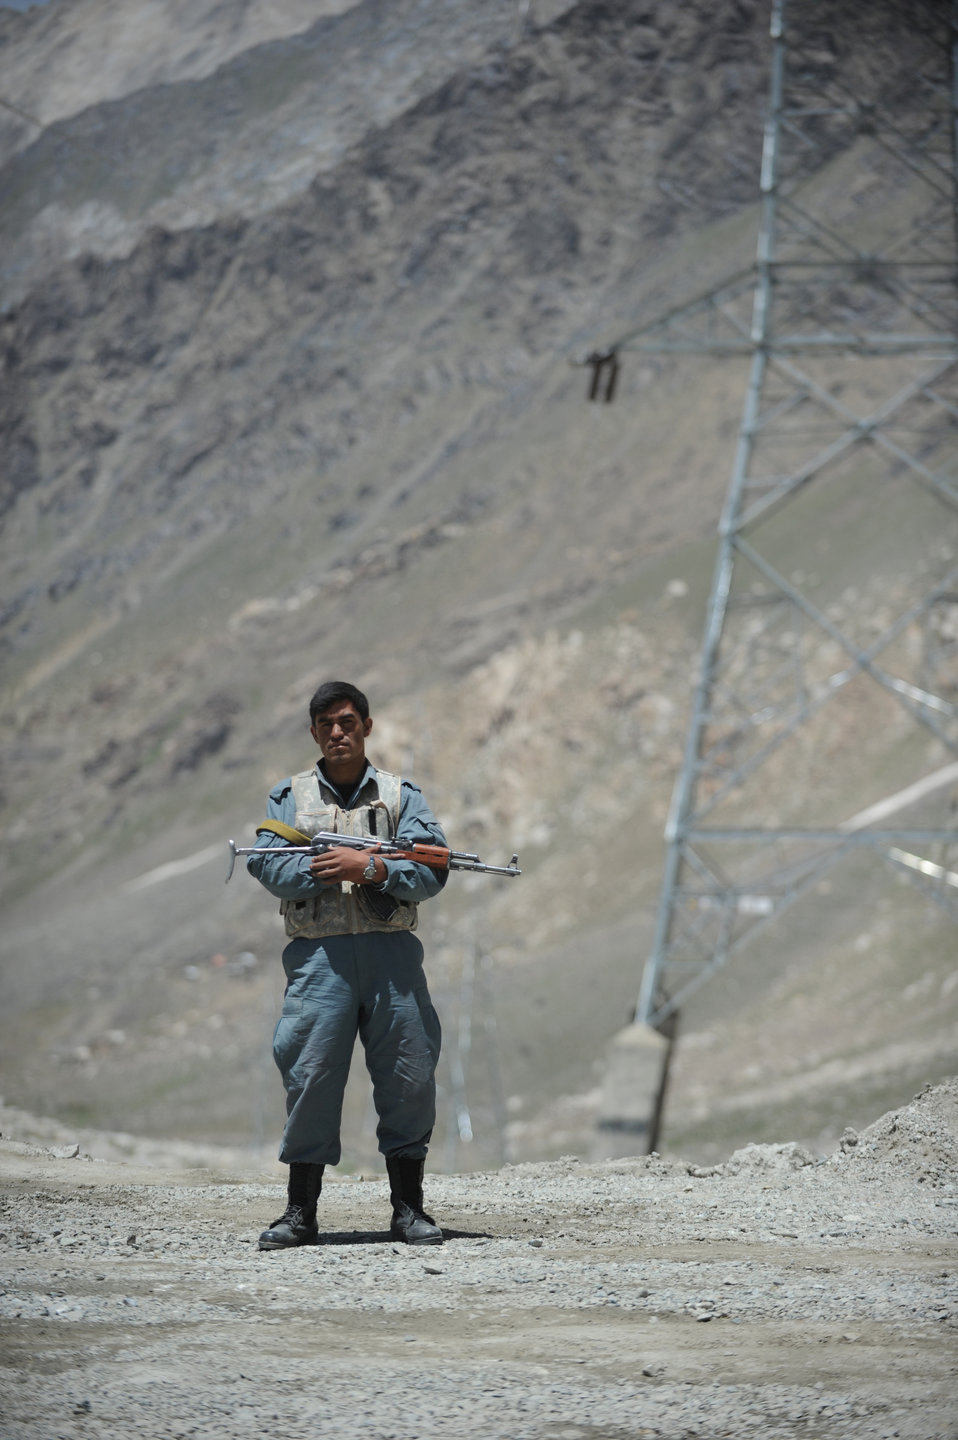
Security at the North entrance of the Salang Tunnel on the border of Parwan and Baghlan Provinces, Afghanistan, on Wednesday, June 15, 2011. (S.K.Vemmer/Department of State)